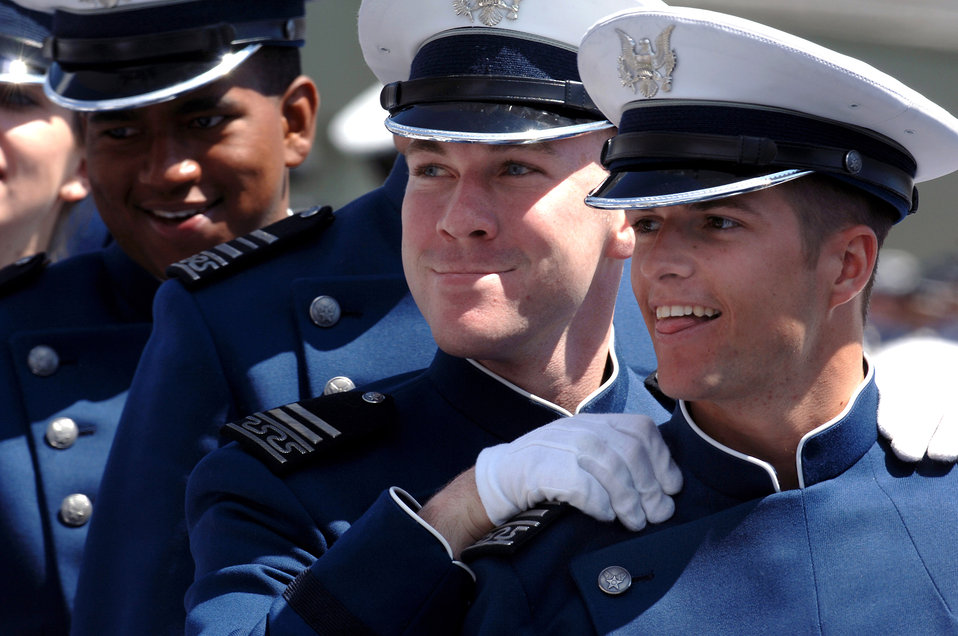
From cadet to lieutenant

First class cadets from the U.S. Air Force Academy line up at the beginning of their commencement exercise to receive their degrees and assume the duties of the Air Force's newest second lieutenants May 30 in Colorado. The academy graduated 977 members of the class of 2007.